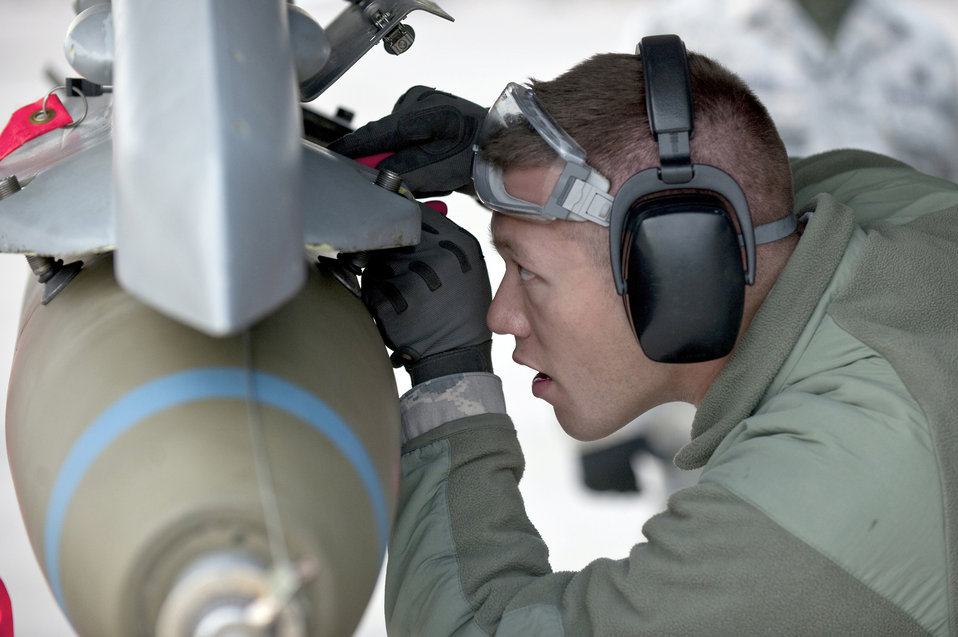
Locked and loaded

Airman 1st Class Lucas Wolf secures an MK-82 bomb on an F-16 Fighting Falcon during a weapons load competition Jan. 7, 2011, at Nellis Air Force Base, Nev. He is an aircraft armament systems apprentice with the 57th Aircraft Maintenance Squadron.